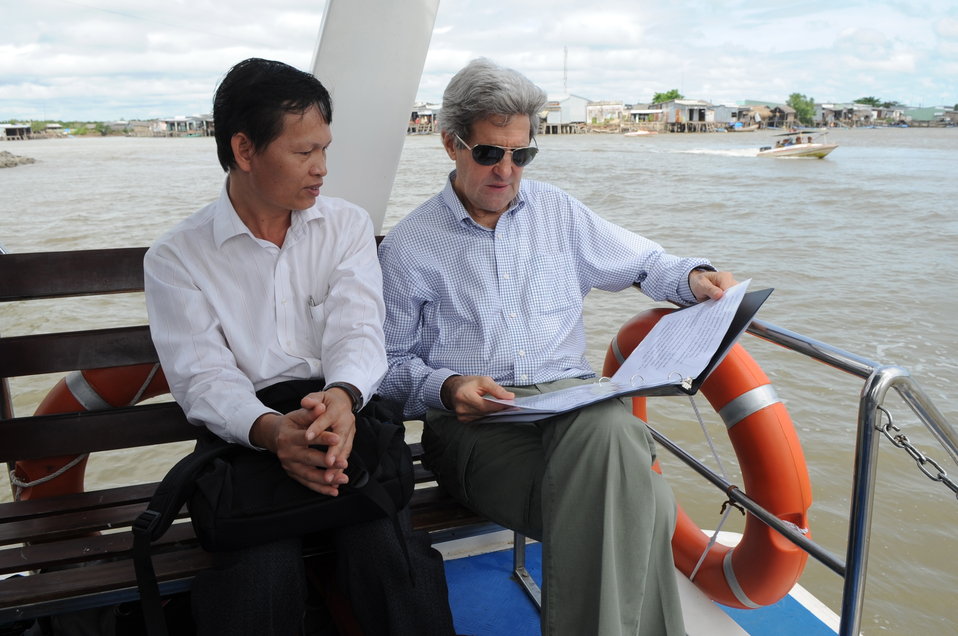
Secretary Kerry Chats With Climate Change Researcher Dang Kieu Nhan

U.S. Secretary of State John Kerry chats with climate change researcher Dang Kieu Nhan before a speech about the topic during a tour of the Mekong River Delta in Vietnam on December 15, 2013.